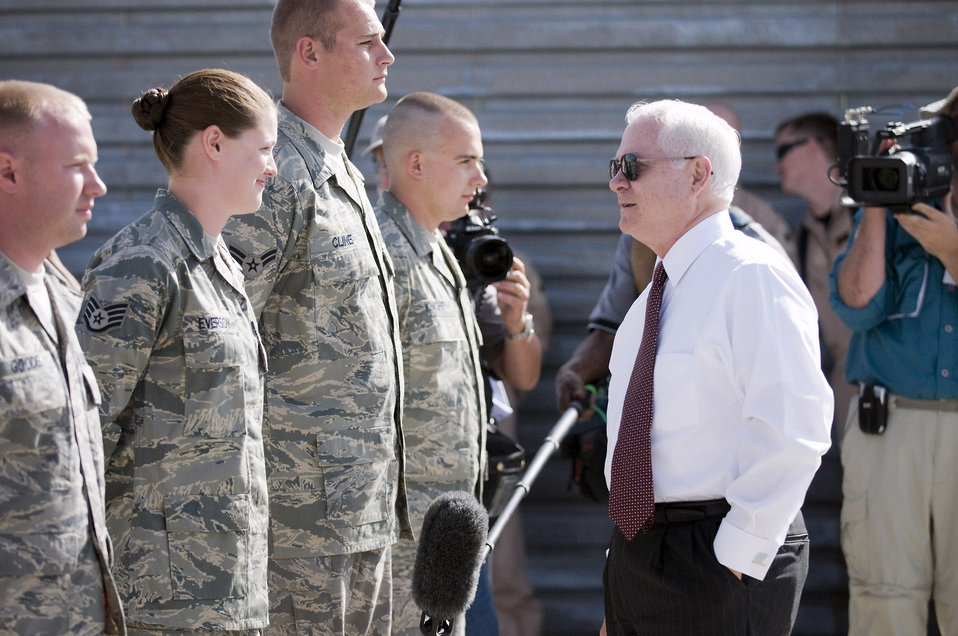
Secretary Gates examines close-air support at Bagram

Secretary of Defense Robert M. Gates talks with Airmen deployed to the A-10 Aircraft Maintenance Unit Sept. 17 at Bagram Airfield, Afghanistan. Secretary Gates meet some of the Airmen deployed here to boost morale and get firsthand views of the mission at Bagram Airfield.